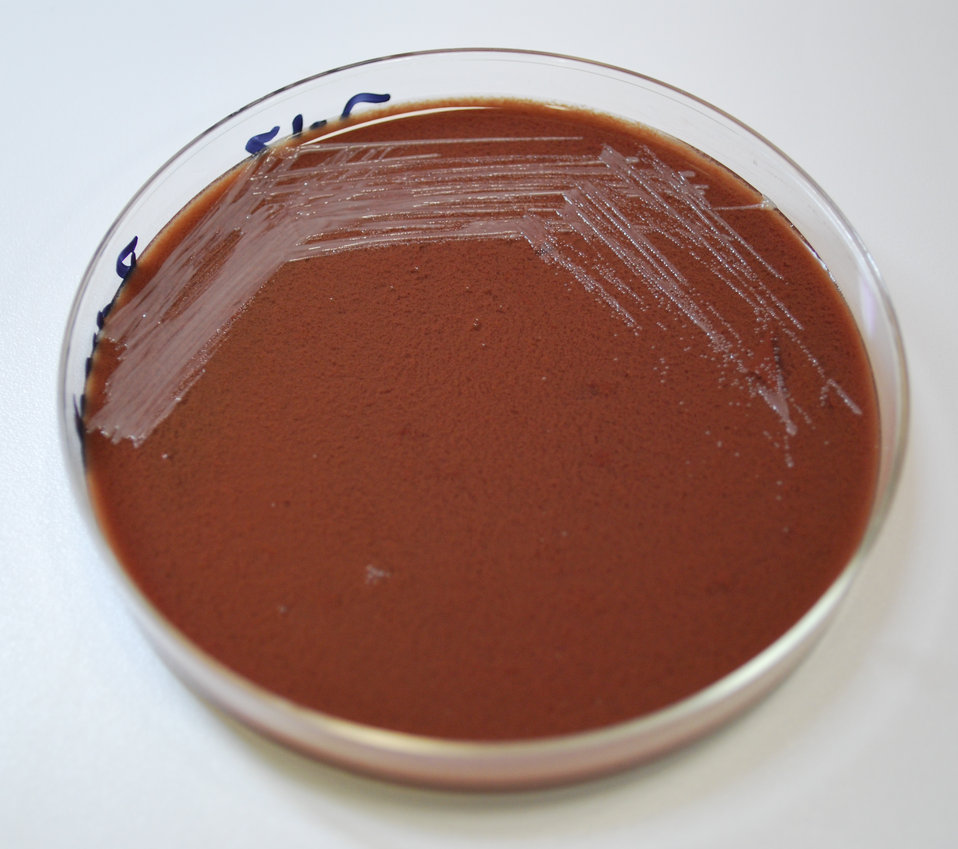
This image depicts the colonial morphology exhibited by colonies of Brucella abortus bacterial, which had been cultivated on chocolate agar, for a period of 48 hours.Infectious Agent